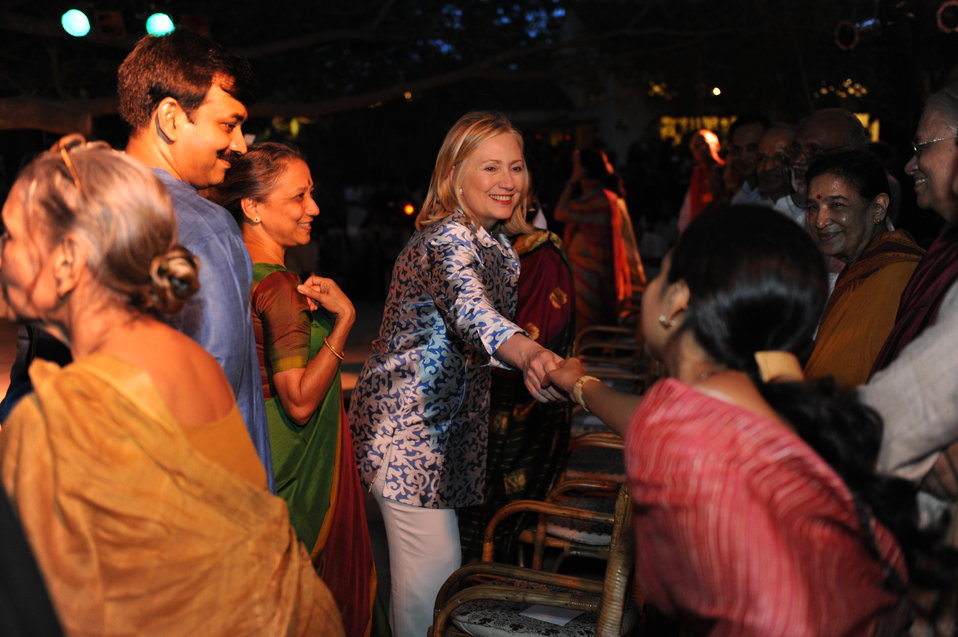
Secretary Clinton Is Greeted By a Member of the Audience

U.S. Secretary of State Hillary Rodham Clinton is greeted by a member of the audience on her way to sit down for a special dance performance at Kalakshetra in Chennai, India, on July 20, 2011. [Paul Cohn/ State Department photo]